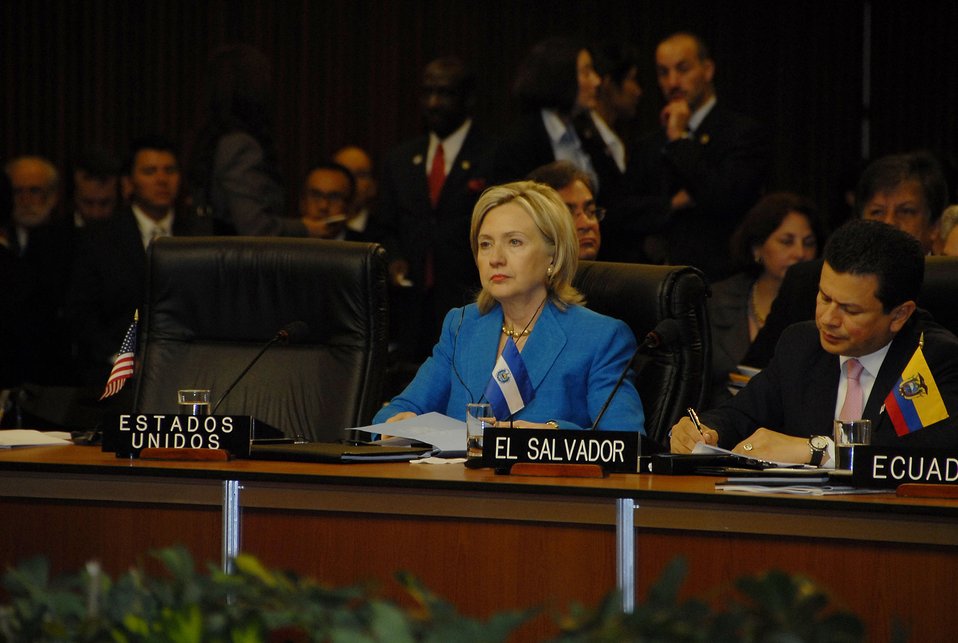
Secretary Clinton Participates in 40th OAS Assembly

U.S. Secretary of State Hillary Rodham Clinton participates in the 40th Assembly of the Organization of American States in Lima, Peru, on June 7, 2010.